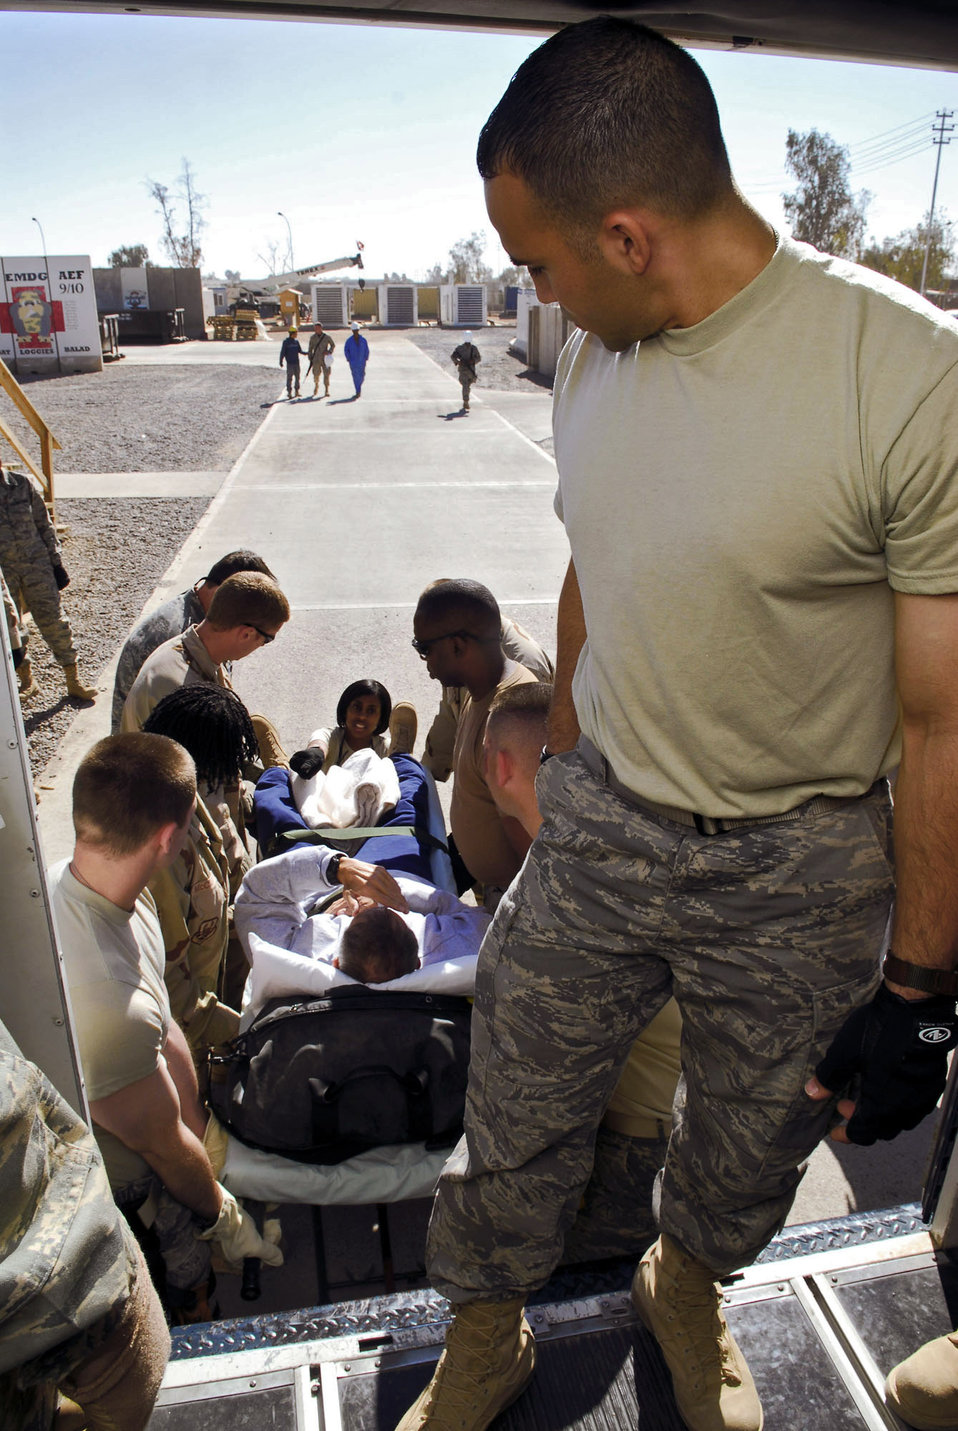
Out of harm's way

Staff. Sgt. Joan Sanchez prepares to load a patient aboard an ambulance bus from volunteers Nov. 13 at Balad Air Base, Iraq. Air Force Theater Hospital volunteers from throughout the base help the Contingency Aeromedical Staging Facility staff load and secure patients. Sergeant Sanchez, a 332nd Expeditionary Aerospace Medical Squadron aerospace medical technician, is deployed from Langley Air Force Base, Va.